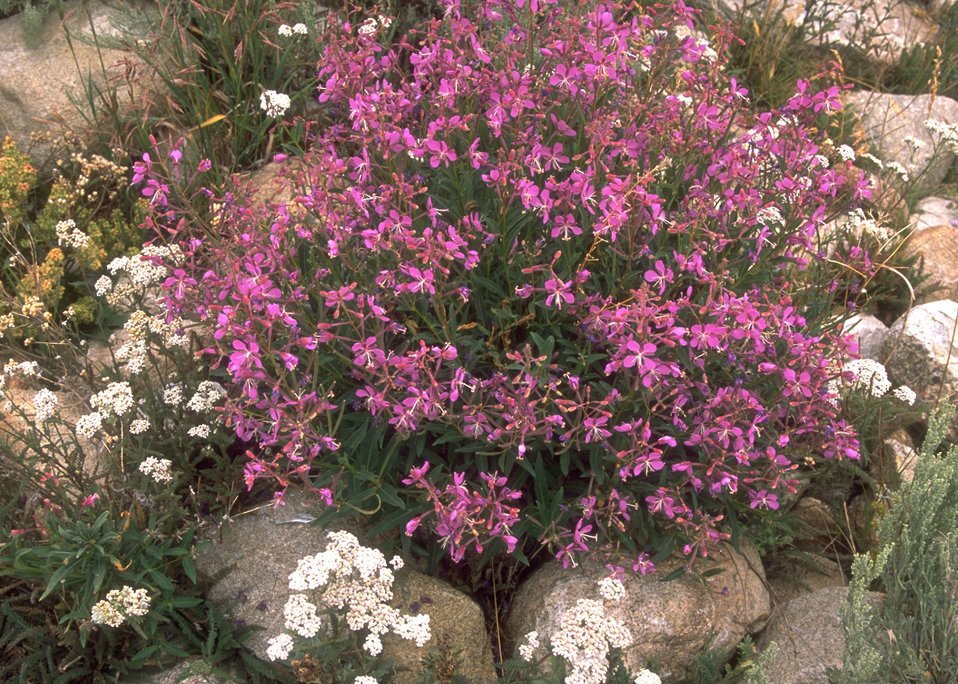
Flowers at Sweetwater Bridge Campground, Rock Springs Field Office.